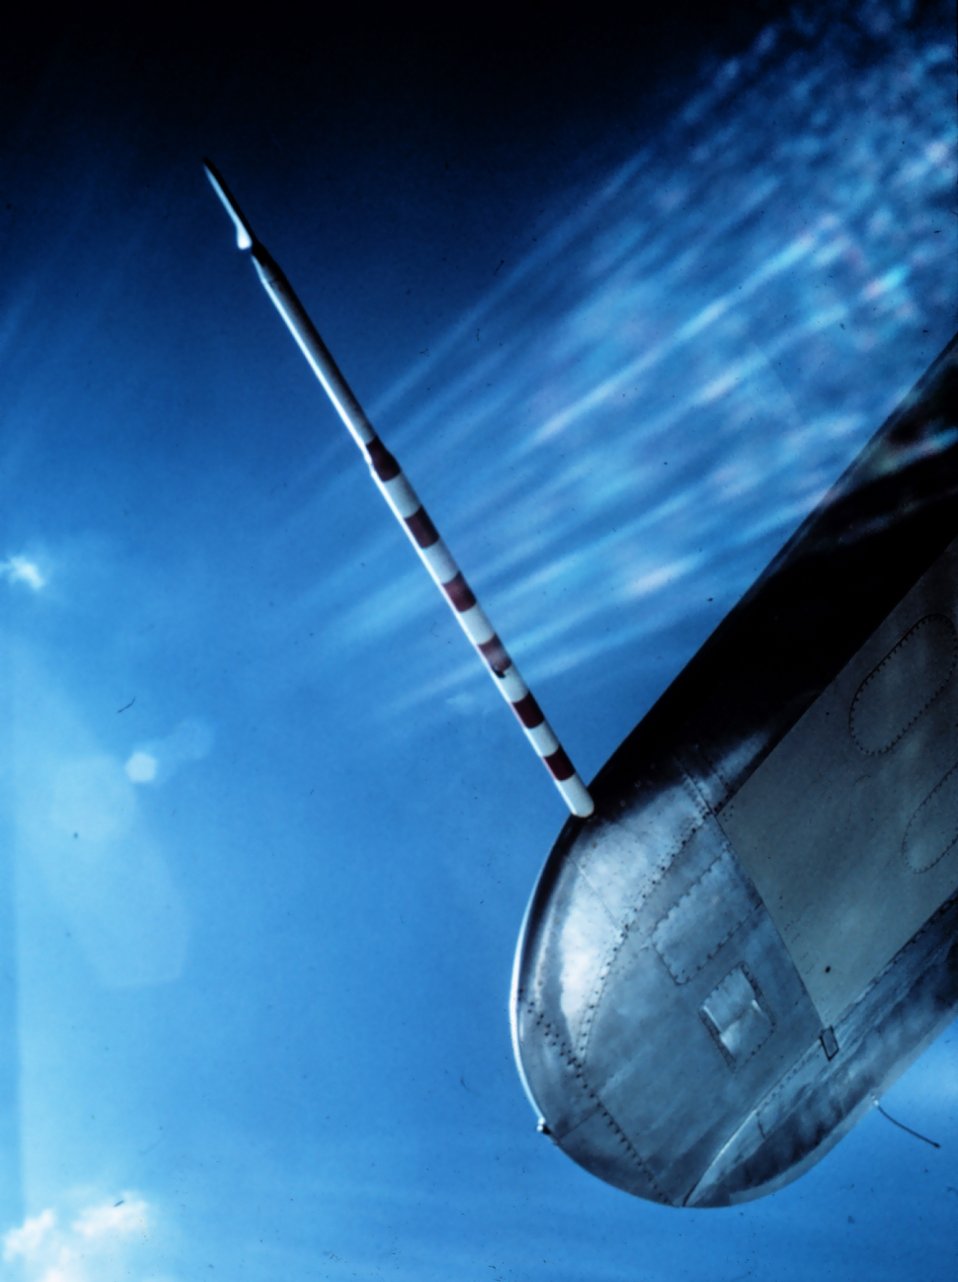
Pitot system.